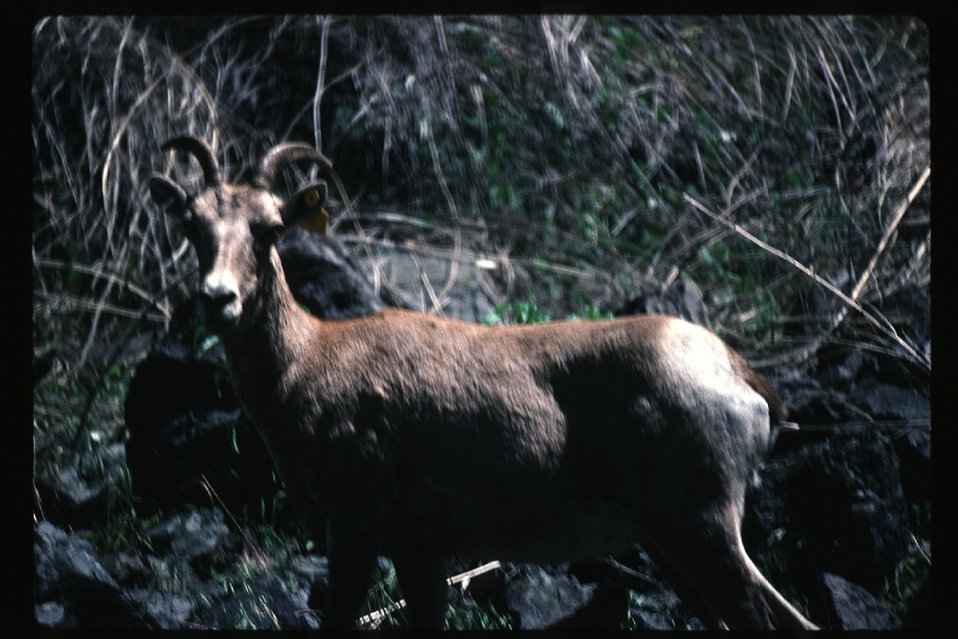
Bighorn sheep UCSC Upper Columbia Salmon Clearwater District